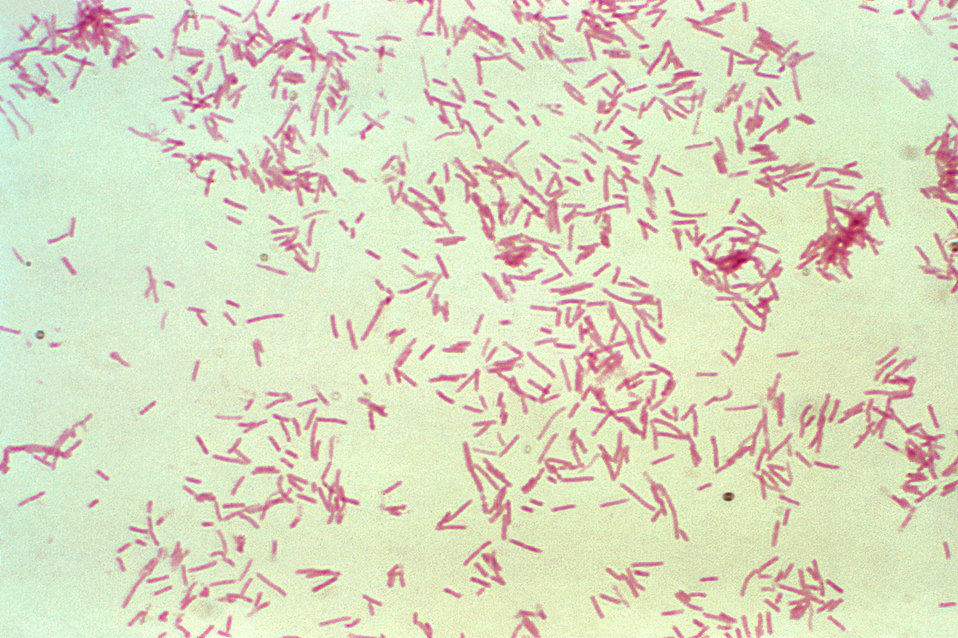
Magnified 1000X, this photomicrograph depicted numbers of Gram-negative Bacteroides fragilis subsp. fragilis bacteria, which had been cultured on Schaedler agar medium, and processed using the Gram-stain method.